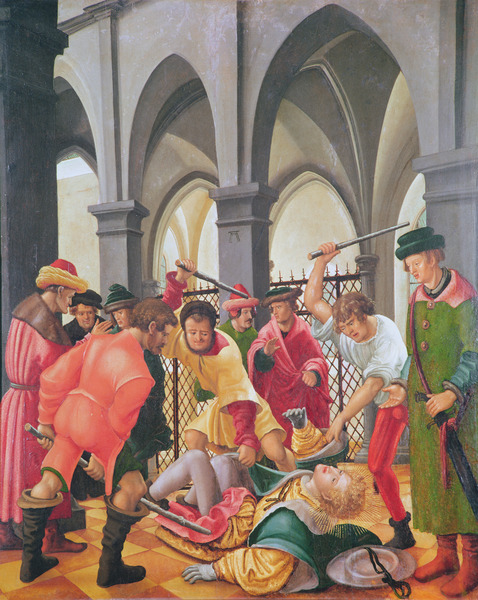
Altdorfer martirio di san floriano, praga